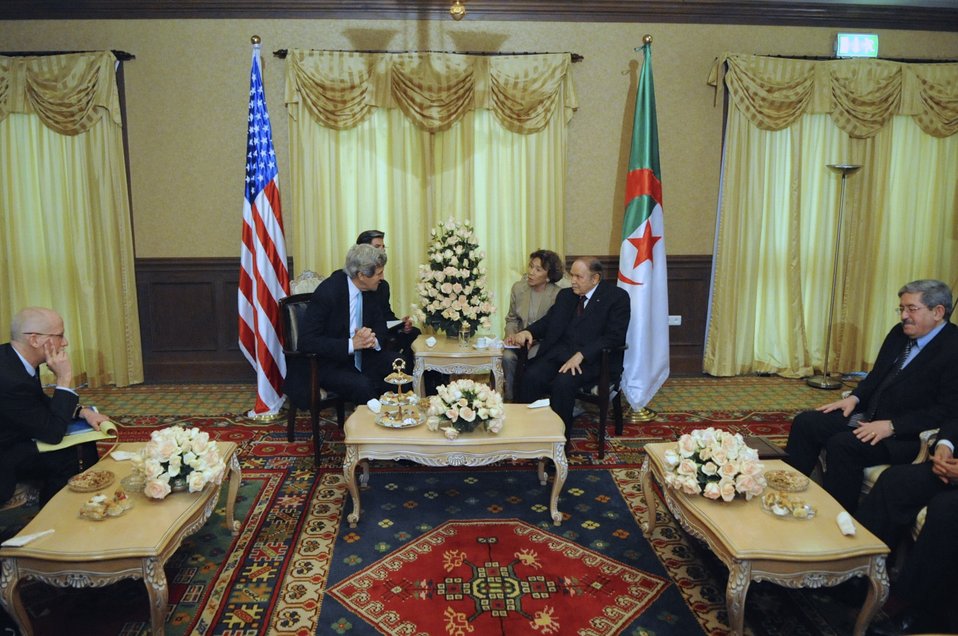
Secretary Kerry, President Bouteflika, and Their Ambassadors Meet in Algiers

Flanked by their respective Ambassadors, U.S. Secretary of State John Kerry meets with Algerian President Abdelaziz Bouteflika outside Algiers, Algeria following a Strategic Dialogue between their two countries on April 3, 2014.